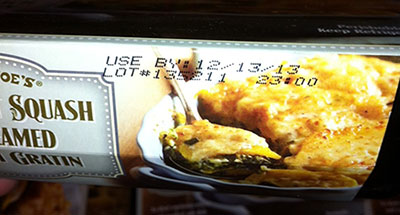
RECALLED - Butternut Squash and Creamed Spinach Gratin

December 2, 2013 – Product Recall – Huxtable’s Kitchen Issues Voluntary Allergy Alert on Undeclared Allergens in Butternut Squash & Creamed Spinach Gratin.